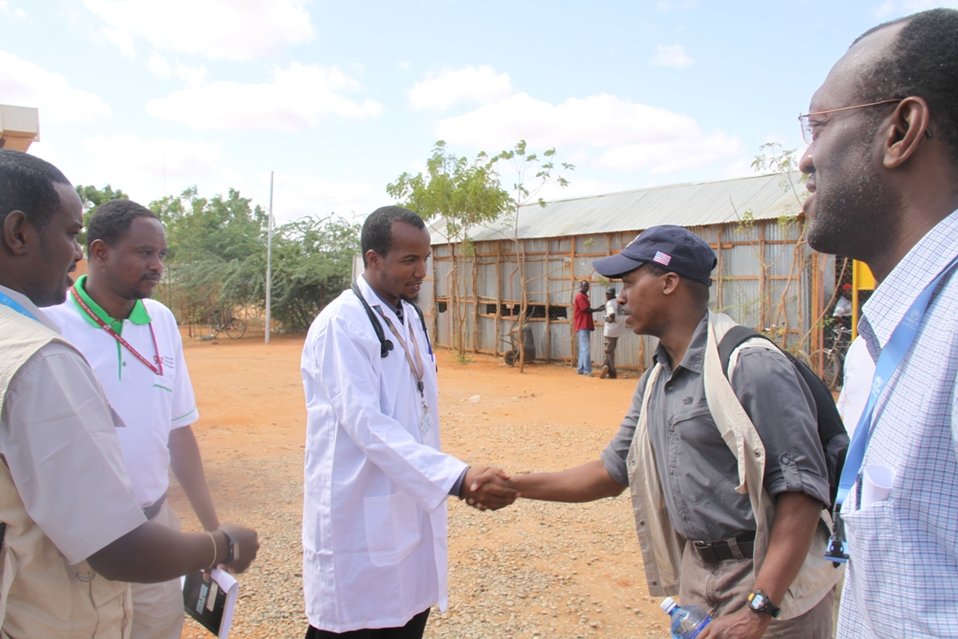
Deputy Assistant Secretary Brigety Visits a Hospital in Dadaab, Kenya

Upon his arrival to the hospital in Dadaab, Kenya, the head doctor greets Deputy Assistant Secretary Reuben Brigety on July 13, 2011.